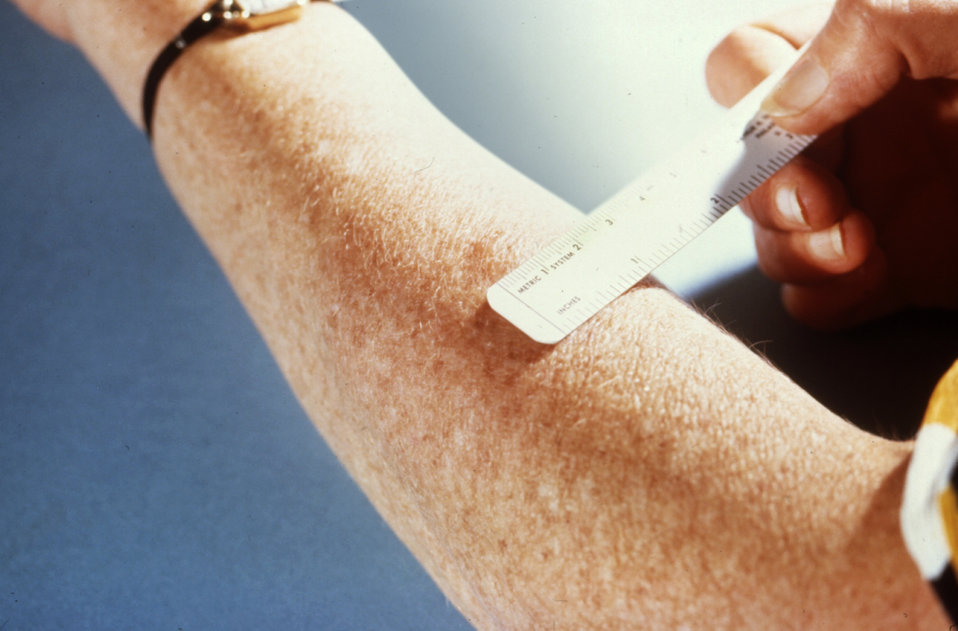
This patient is shown having his reaction site measured 48-hours after receiving a Mantoux test.